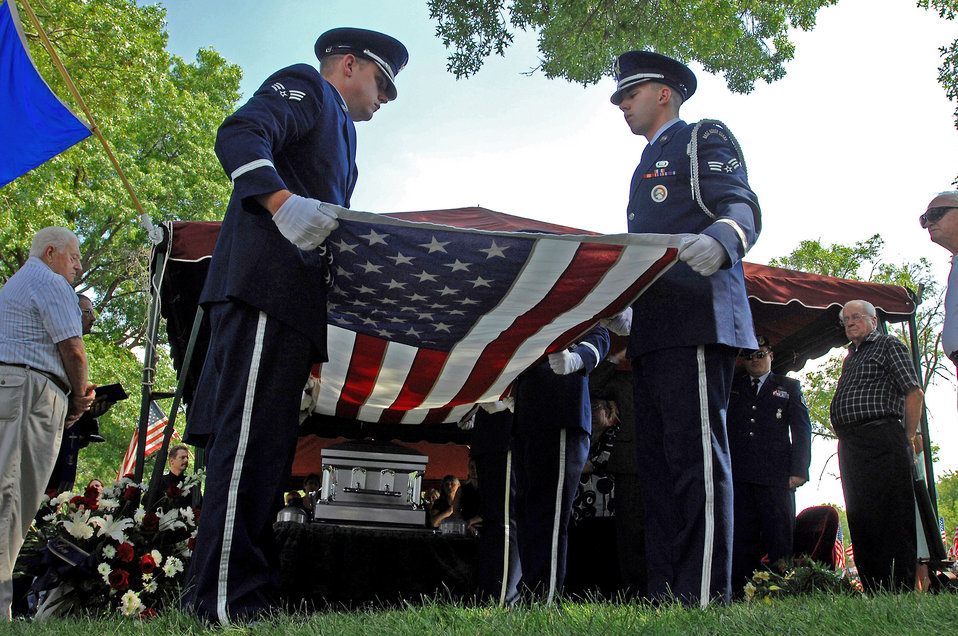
War hero brought home, laid to rest after 30 years MIA

Airmen from the Whiteman Air Force Base Honor guard fold a flag July 27 to honor Chief Master Sgt. Quincy Adam at Chapel Hill Memorial Cemetery. Chief Adam is a Vietnam War veteran who was missing in action for more than 40 years. Chief Adam's remains were discovered in Southeast Asia, and he was finally brought home to be laid to rest, giving his family closure in their lives.